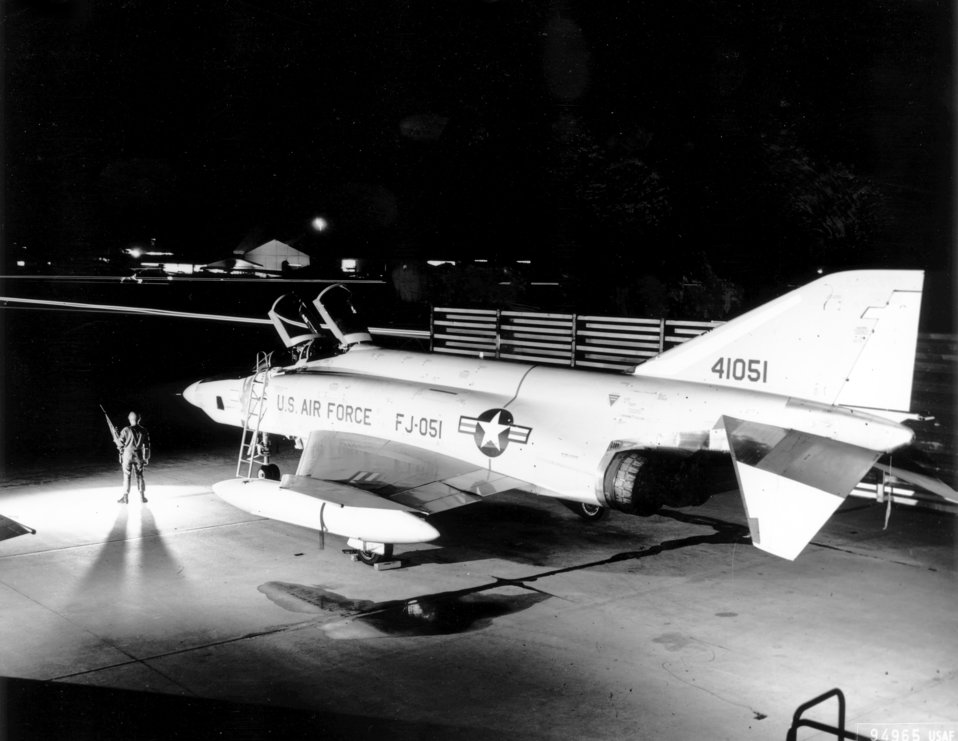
RF-4C

1960's -- An airman stands guard over a U.S. Air Force RF-4C at Tan Son Nhut Air Base, Saigon, Republic of Vietnam. May 24, 1966 Air Force Photo